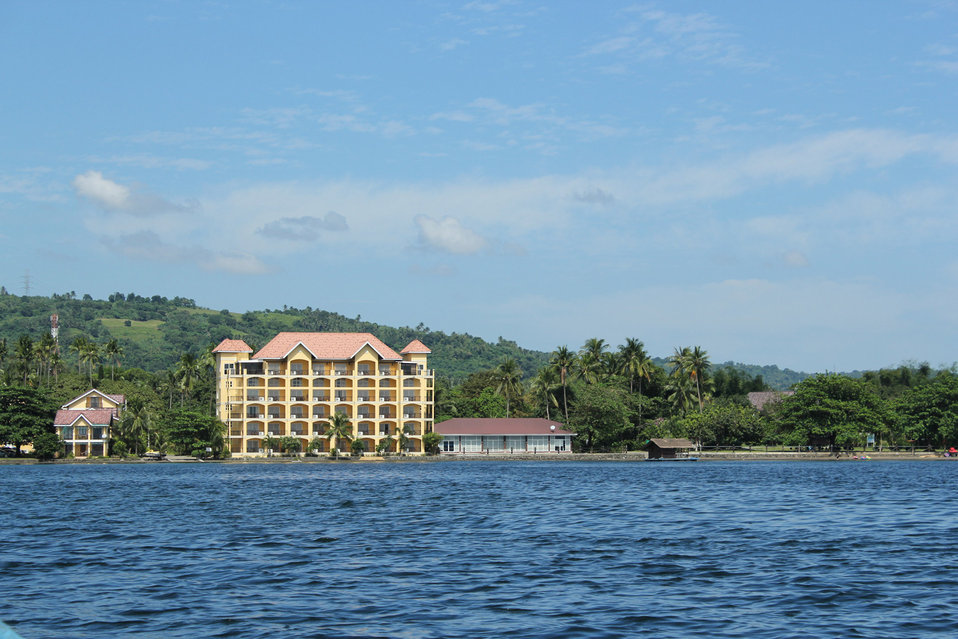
Getaway vacation.